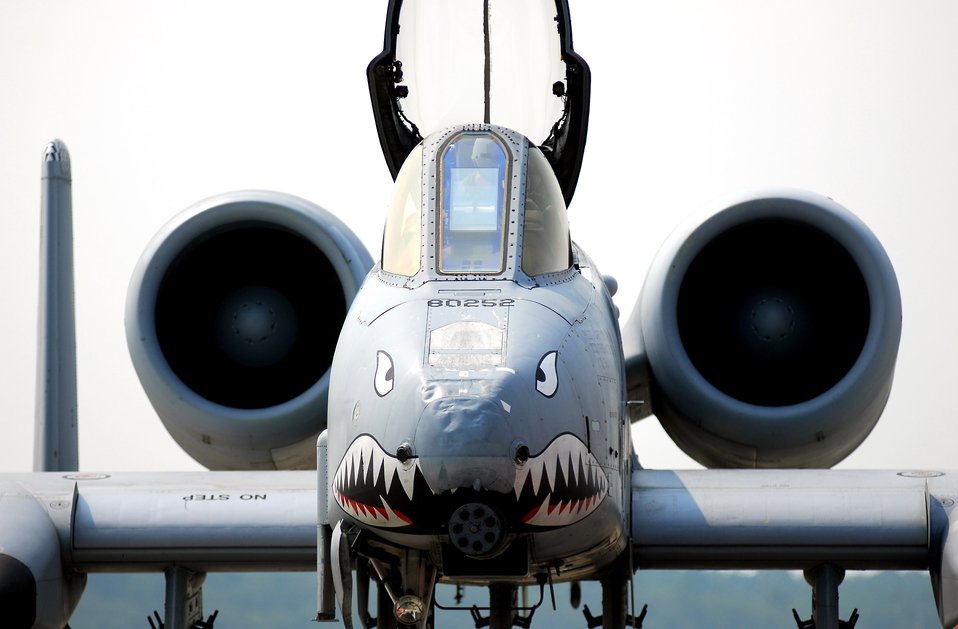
First improved Thunderbolt II arrives at Moody

The first A-10C Thunderbolt II sits on the ramp after its arrival Aug. 7 to Moody Air Force Base, Ga. This aircraft is the first of approximately 50 upgraded A-10Cs moving to the Georgia base as a part of force realignment. The move is expected to be complete in early spring 2008. The upgrades enable the A-10C to deliver the Air Force's latest generation of precision guided munitions and improve the A-10's communications capabilities, allowing the aircraft to share detailed information with ground-based warfighters.